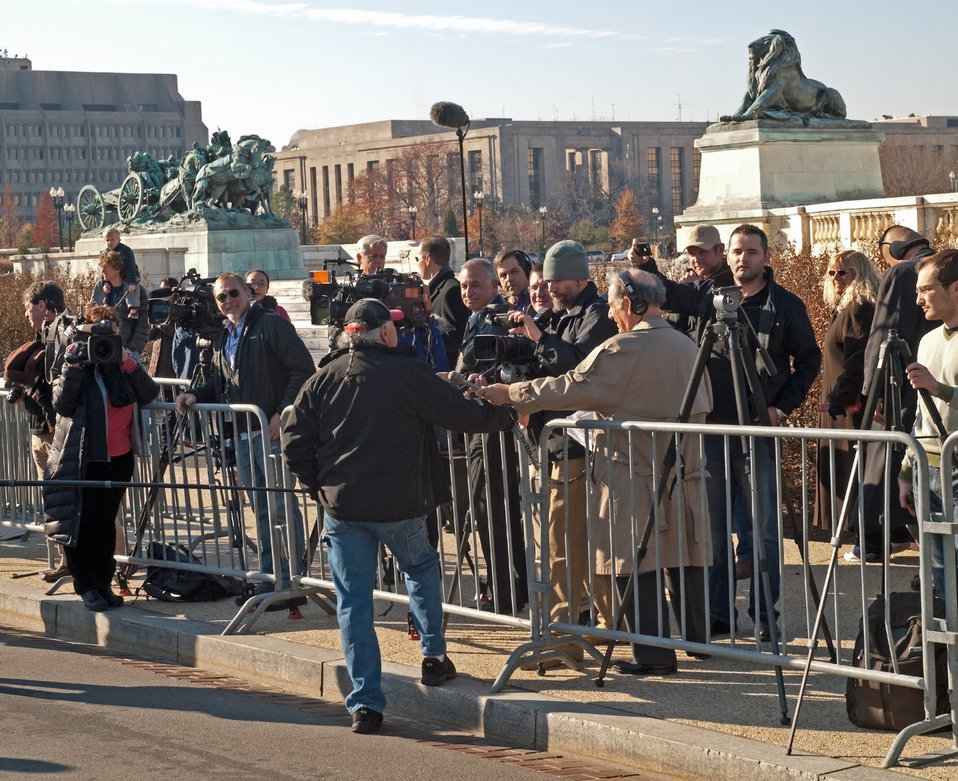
Former Colorado Senator Ben Nighthorse Campbell is interviewed after driving the 2012 Capitol Christmas Tree to Washington, D.C. on Nov.26, 2012. The 73-foot Englemann spruce traveled from the White River National Forest in Colorado.